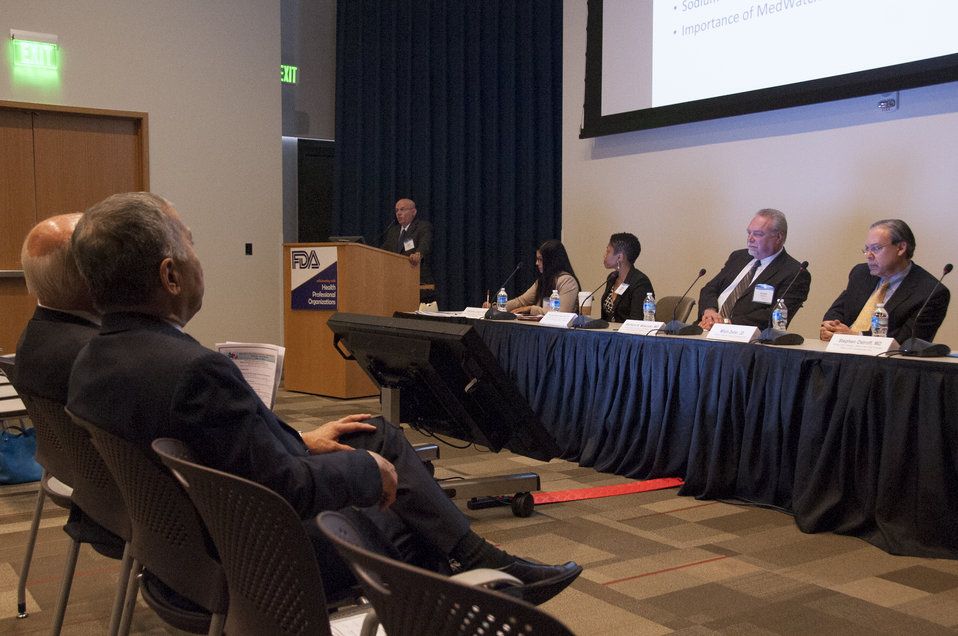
FDA's 2014 Health Professional Organizations Conference (1127)

May 14, 2014; At podium: Stephen Ostroff, MD, Acting Chief Scientist of FDA's Office of the Chief Scientist. At FDA's third annual Health Professional Organizations Conference, some of FDA’s most senior leaders exchanged views and discussed issues of mutual interest with senior representatives from key health professional organizations. To learn more, go to FDA Voice.

This photo is free of all copyright restrictions and available for use and redistribution without permission. Credit to the U.S. Food and Drug Administration is appreciated but not required.

Privacy and use information: www.flickr.com/people/fdaphotos/